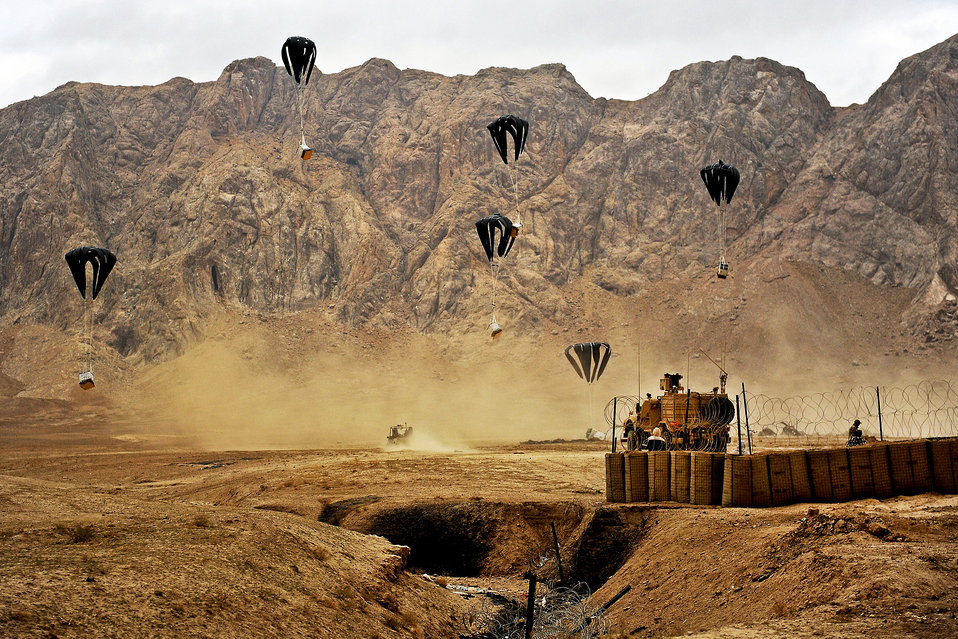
Supplying the force

Supplies are air dropped Nov. 26, 2011, into Afghanistan. Supplies were frequently air dropped at remote locations to sustain forward operating bases, combat outposts and the service members living at those locations.